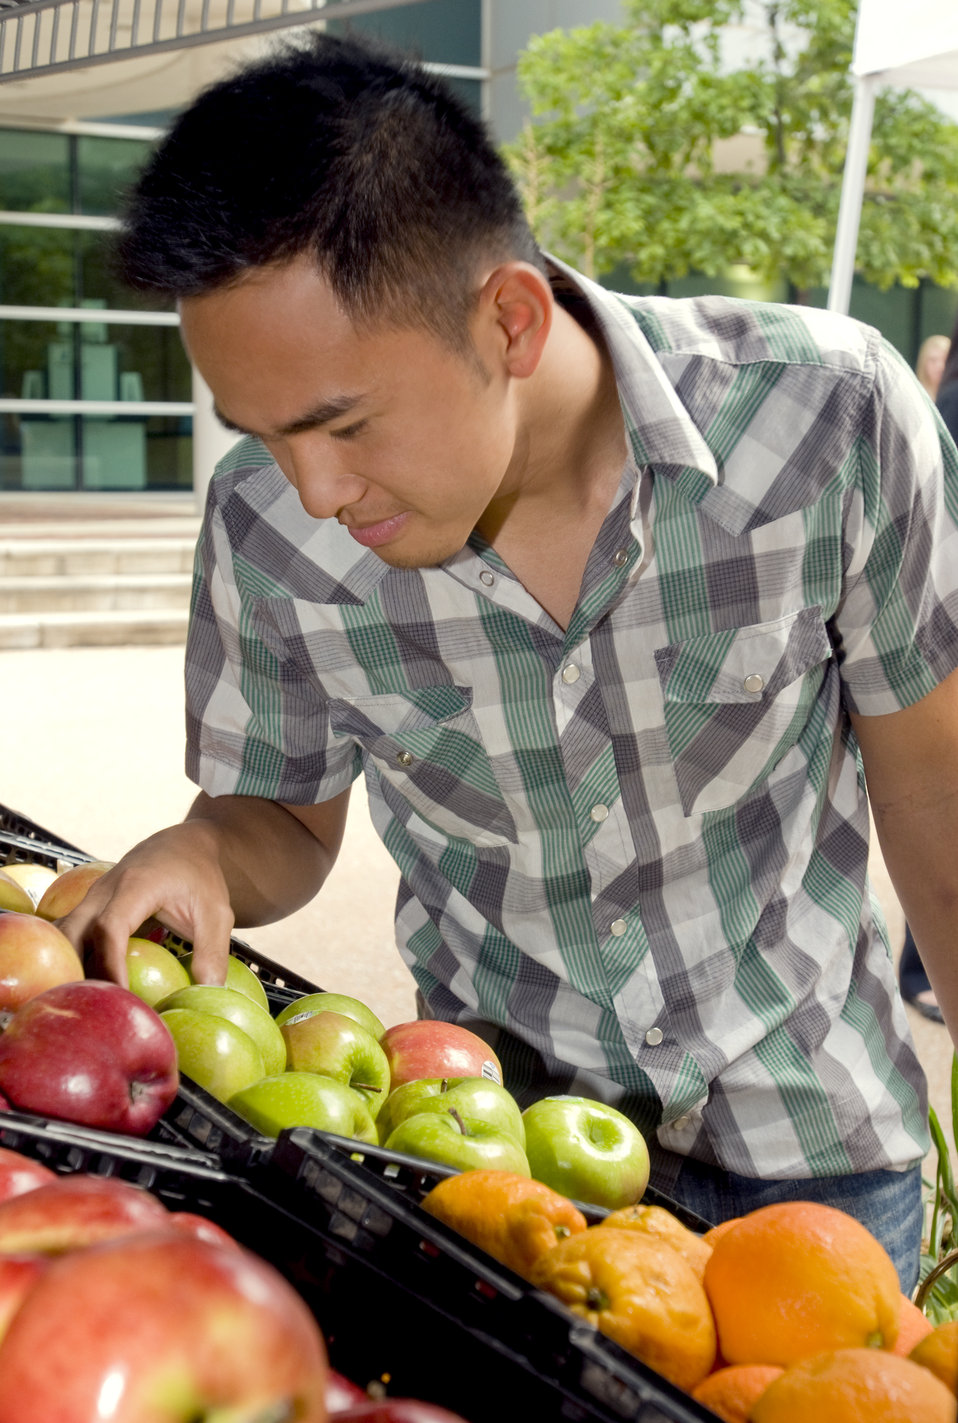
This man was photographed as he was shopping for groceries at a mobile Georgian farmers market at a point in his activity where he was about to choose from a number of green apples in the market's produce section.